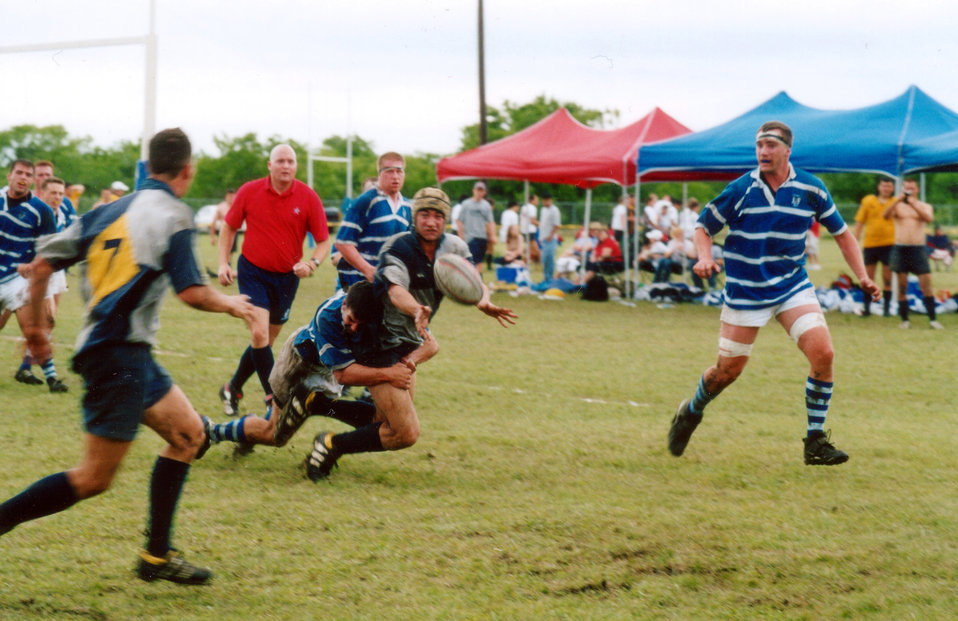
Air Force edges Navy rugby team

SAN ANTONIO -- Rugby players from the U.S. Air Force Academy and the U.S. Naval Academy battle it out during the Alamo City Fiesta Rugby Tournament here April 24. The Air Force won the Commandant's Cup Trophy after successfully kicking two of three field goals in an overtime